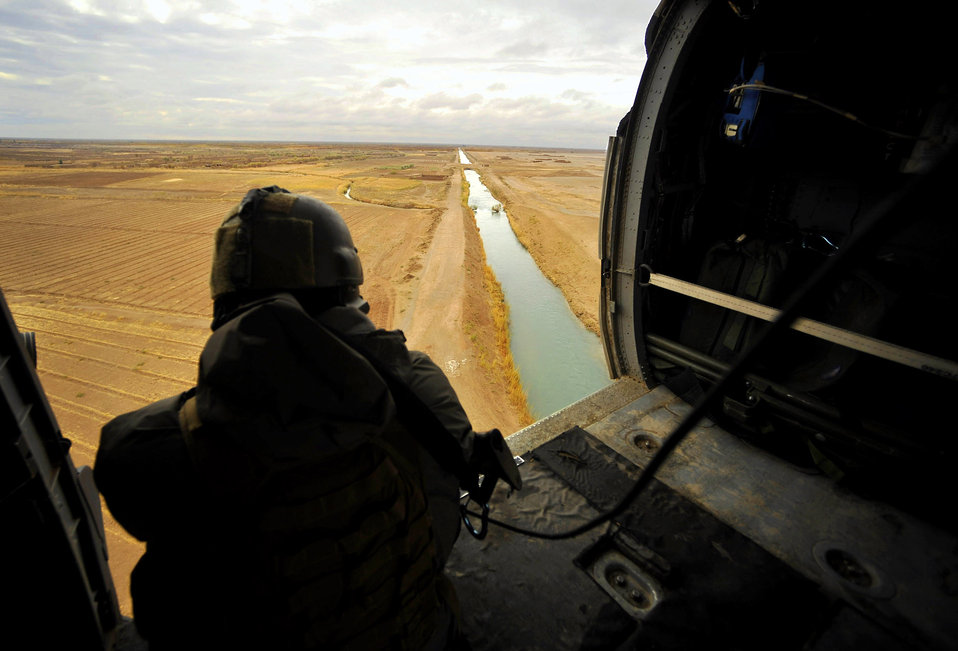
Squadron highlights capabilities during Afghan rescue mission

A pararescueman looks out the door of an HH-60G Pave Hawk while on the way to pick up a patient Dec. 8, 2009. The members of the 66th Expeditionary Rescue Squadron can respond to medical evacuations in less than seven minutes to pick up patients in need of care. The pararescueman is assigned to the 66th Expeditionary Rescue Squadron.